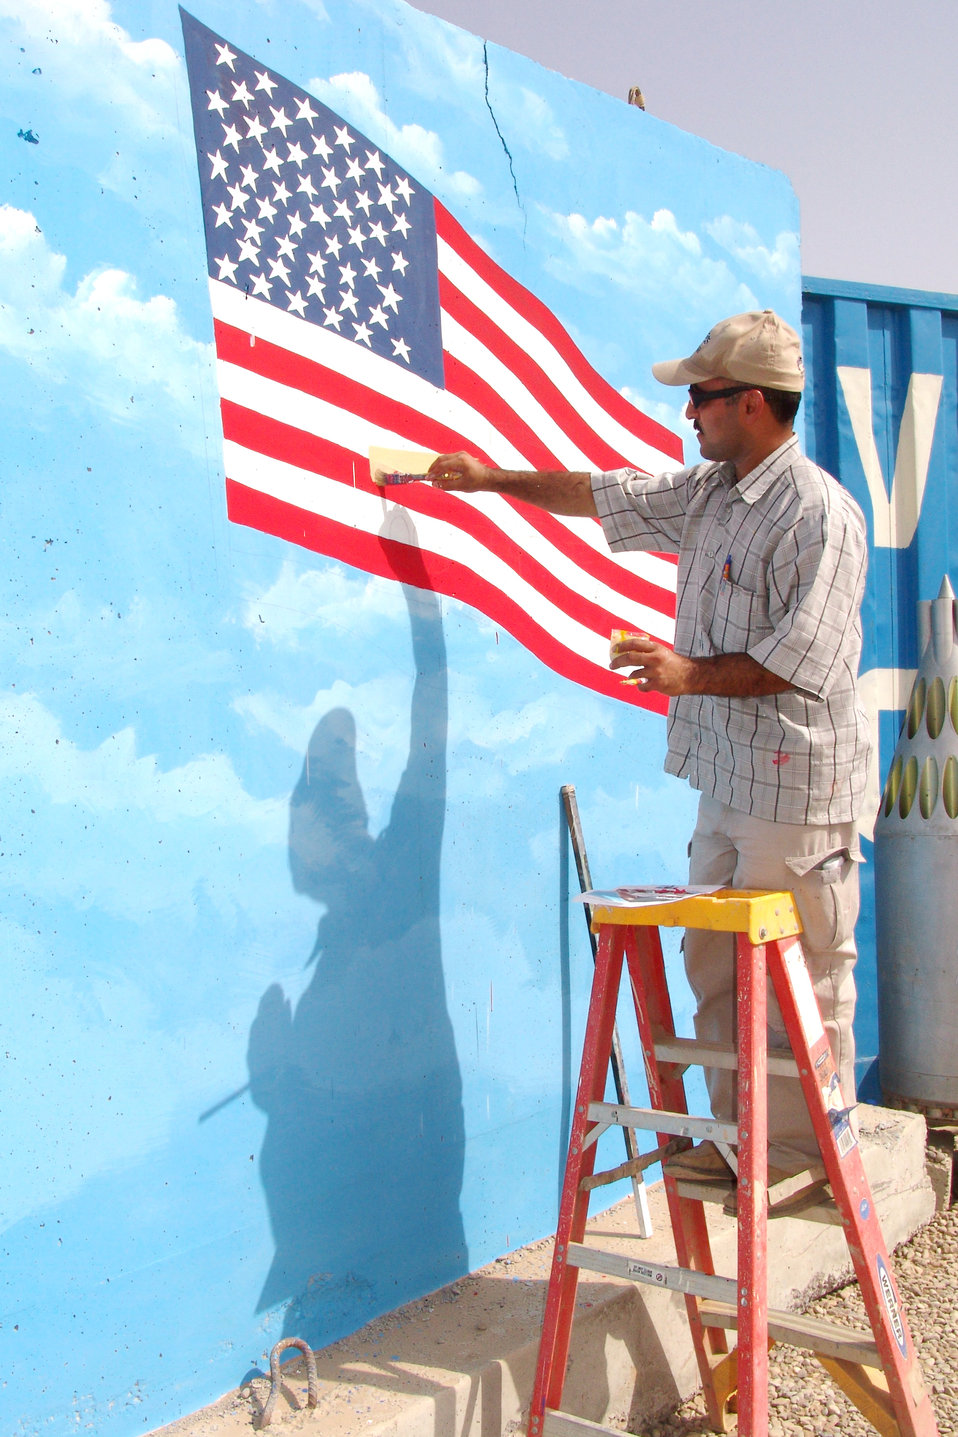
Vehicle operations remembers fallen Airmen

KIRKUK AIR BASE, Iraq -- A local national paints the mural that will stand as a memorial to Airman 1st Class Carl Anderson and Staff Sgt. Dustin Peters. Airman Anderson and Sergeant Peters died while providing security escort for convoys in Iraq.